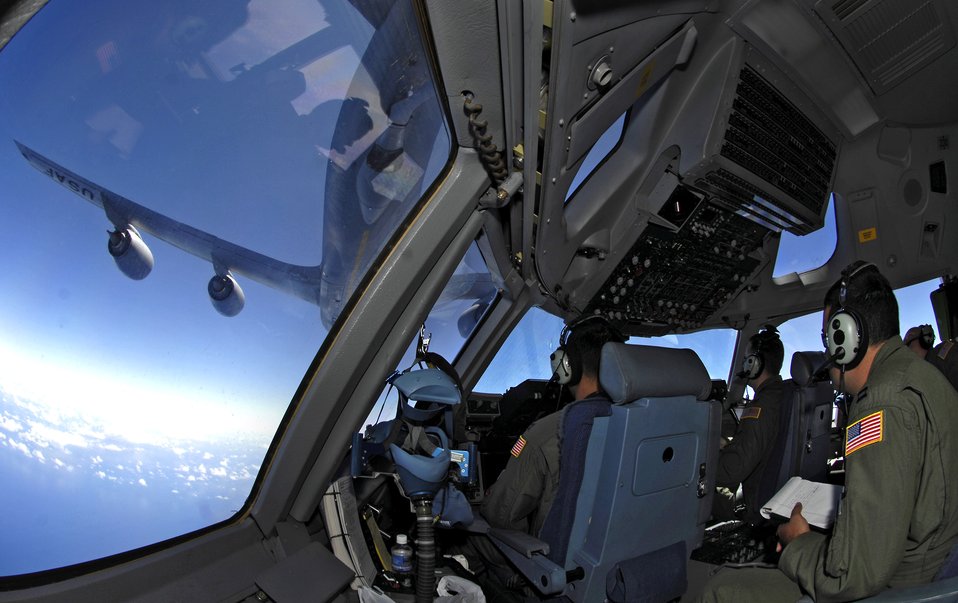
Hickam crew prepares for AMC Rodeo

C-17 Globemaster III aircrew members practice aerial refueling as their aircraft receives fuel from a KC-135 Stratotanker June 22 during a refueling training mission over the Pacific Ocean. The C-17 from the 535th Airlift Squadron at Hickam Air Force Base, Hawaii, and the KC-135 from the 909th Air Refueling Squadron at Kadena Air Base, Japan, are practicing for the upcoming 2007 Air Mobility Command Rodeo.